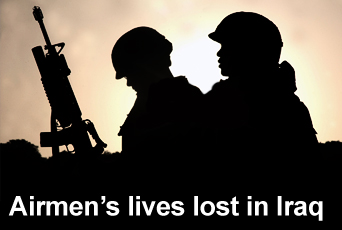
Airmen's lives lost

The Department of Defense announced Jan. 8 the death of three airmen who were killed Jan. 7 by a vehicle-borne improvised explosive device while performing duties in the Baghdad area supporting Operation Iraqi Freedom.